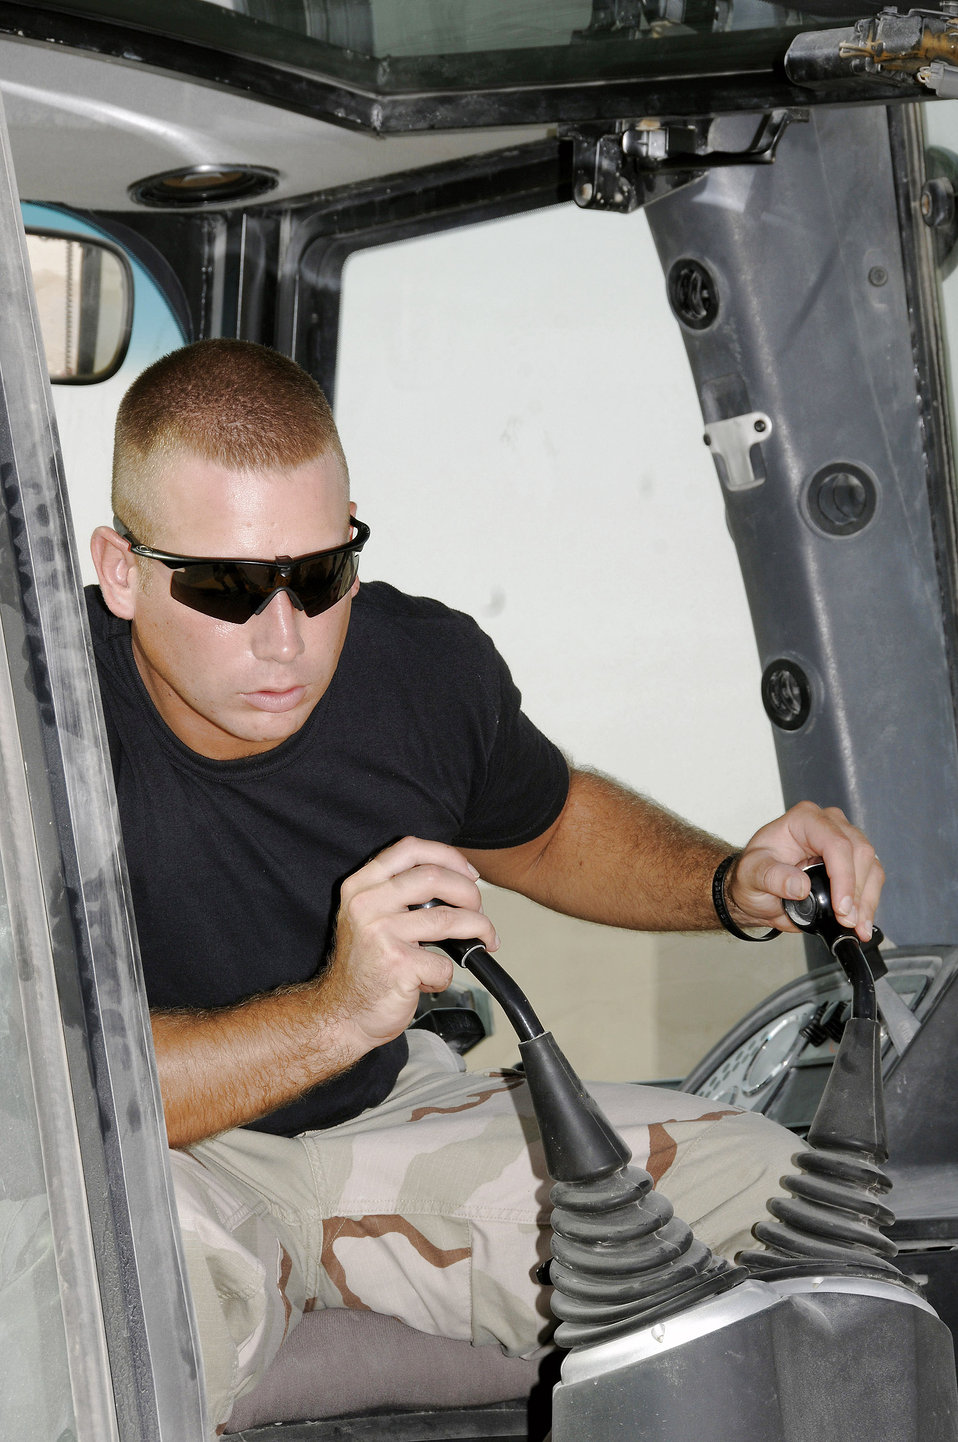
Emergency repairs

Staff Sgt. David Bengate operates a backhoe to clear dirt from around a broken section of water main Sept. 15 at a Southwest Asia air base. The broken pipe led to a shut down of water in all of the Blatchford-Preston Complex at here. Sergeant Bengate, a native of Cadillac, Mich., is 379th Expeditionary Civil Engineer Squadron member deployed from McConnell Air Force Base, Kan.